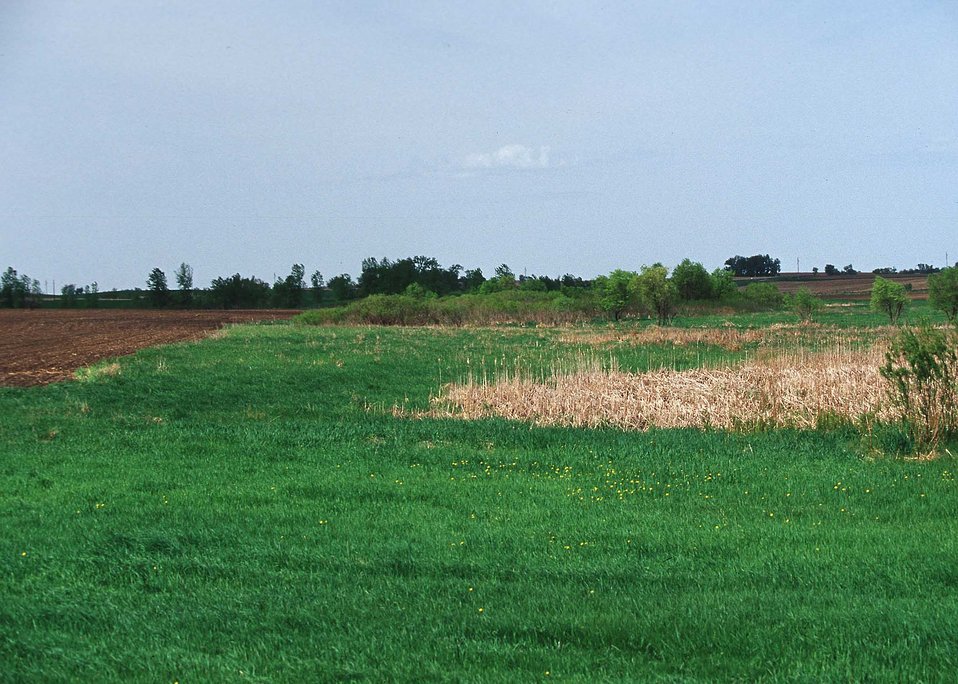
Food plot and wildlife habitat in eastern South Dakota.